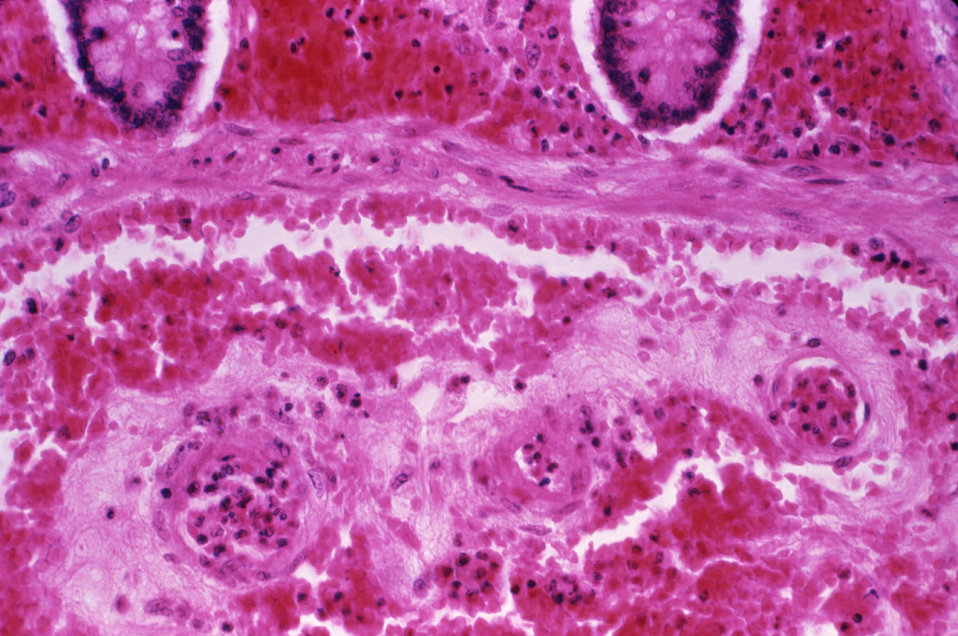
This micrograph reveals submucosal hemorrhage in the small intestine, in a case of fatal human anthrax; H&E stain; Mg. 240X.